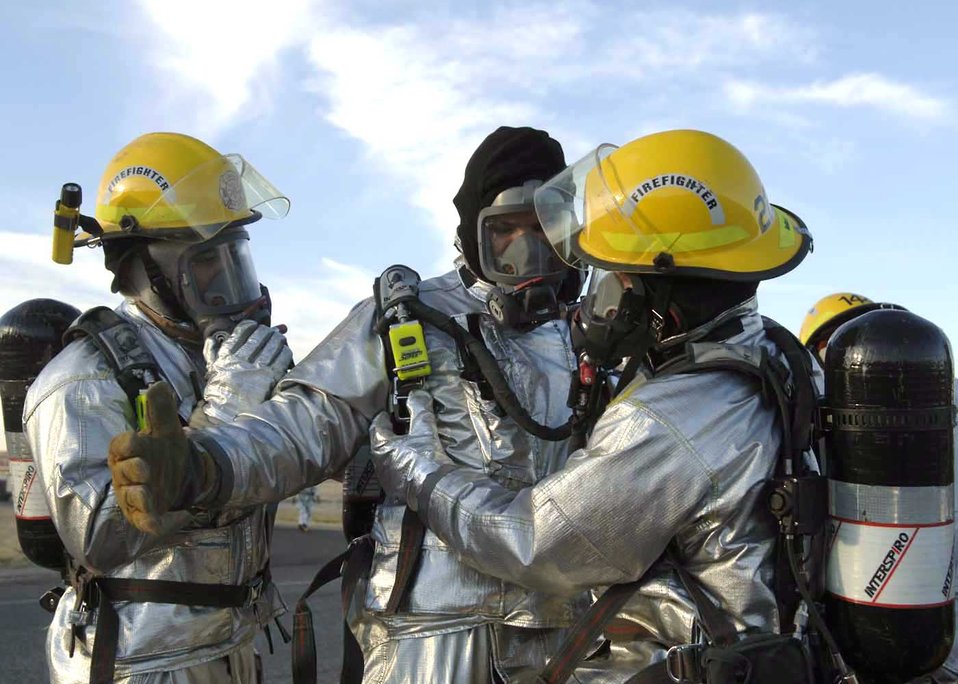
Training to fight fires together

Davis-Monthan Air Force Base firefighters help one another in the decontamination process Dec. 4 at Davis-Monthan AFB, Ariz. Exercise Vigilant Shield 07 is a joint Department of Defense and federal nuclear weapon accident exercise. The exercise scenario involved a C-17 Globemaster III carrying four nuclear weapons to be diverted to Davis-Monthan AFB due to simulated engine failure that caused an aircraft accident. Davis-Monthan firefighters, the Tucson Fire Department, Tucson Police Department, and many different agencies ranging form local to national levels responded to the simulated scene.